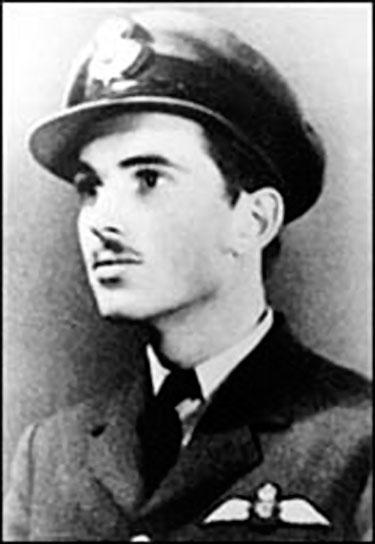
Pilot Officer John G. Magee Jr.

Pilot Officer John Gillespie Magee Jr. was an American serving with the Royal Canadian Air Force during the Battle of Britain in 1941. The experience led to the poem,